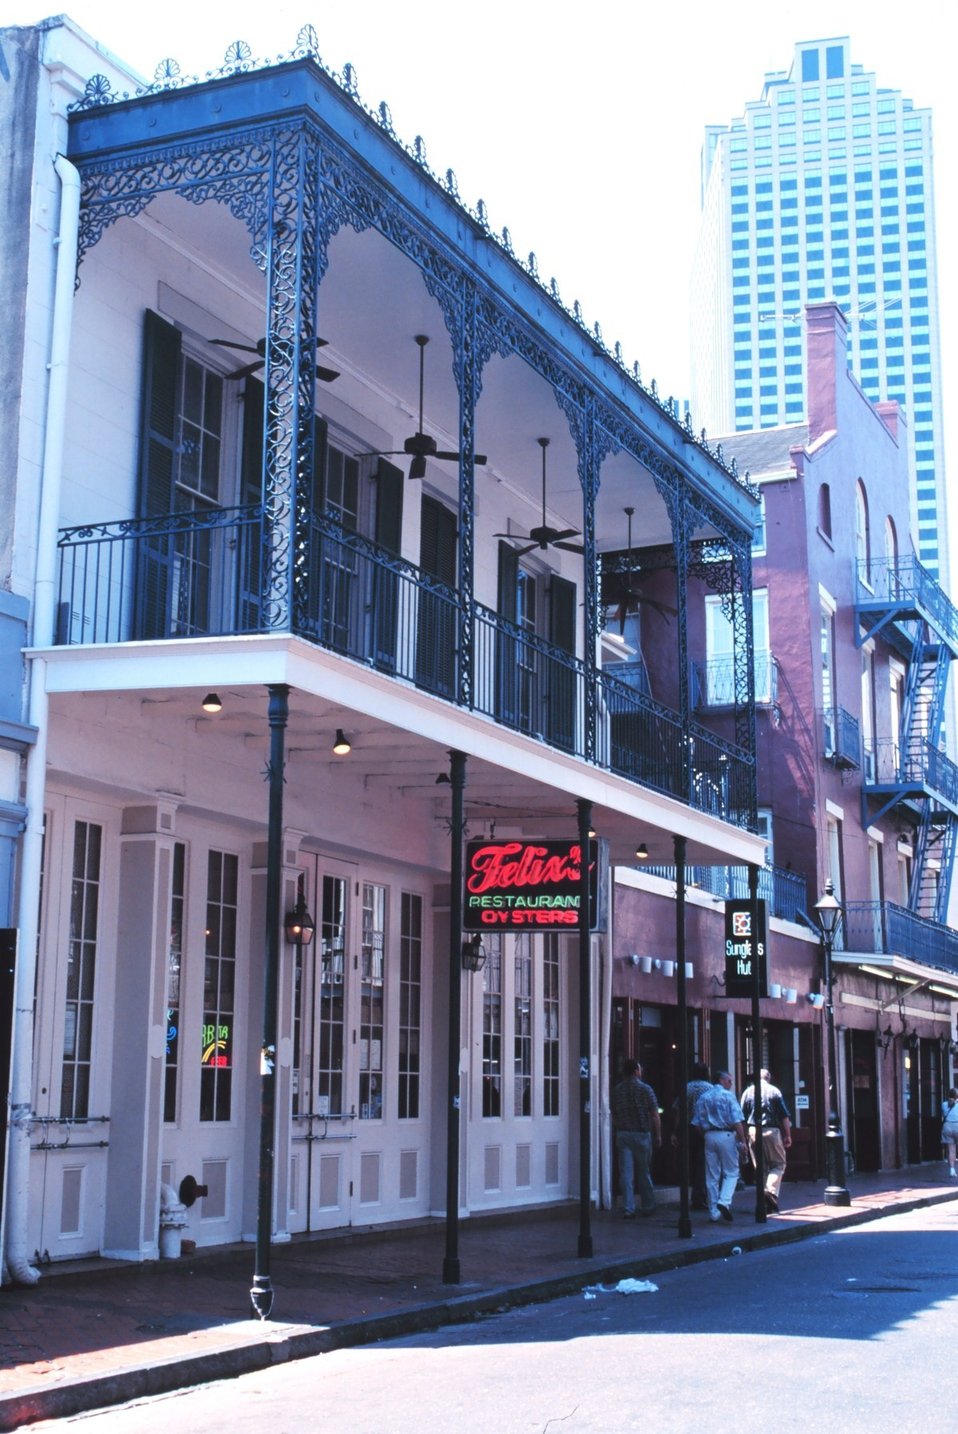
Felix's Restaurant, showing the old French decorative ironwork